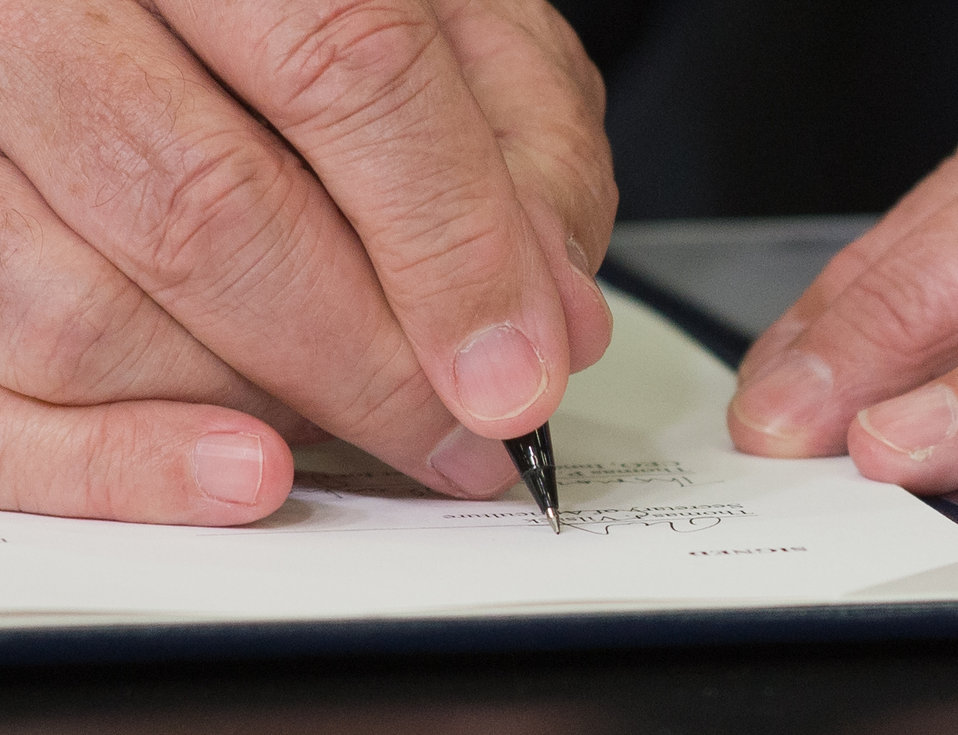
Agriculture Secretary Tom Vilsack signs a Memorandum of Understanding (MOU), during the Innovation Center For U.S. Dairy Sustainability Council Meeting, on Wednesday, Apr. 24, 2013, at the White House, Washington, D.C. The objectives of the MOU are to increase the construction of anaerobic digesters and explore innovative ways to use products previously considered waste streams from dairy production, processing and handling.